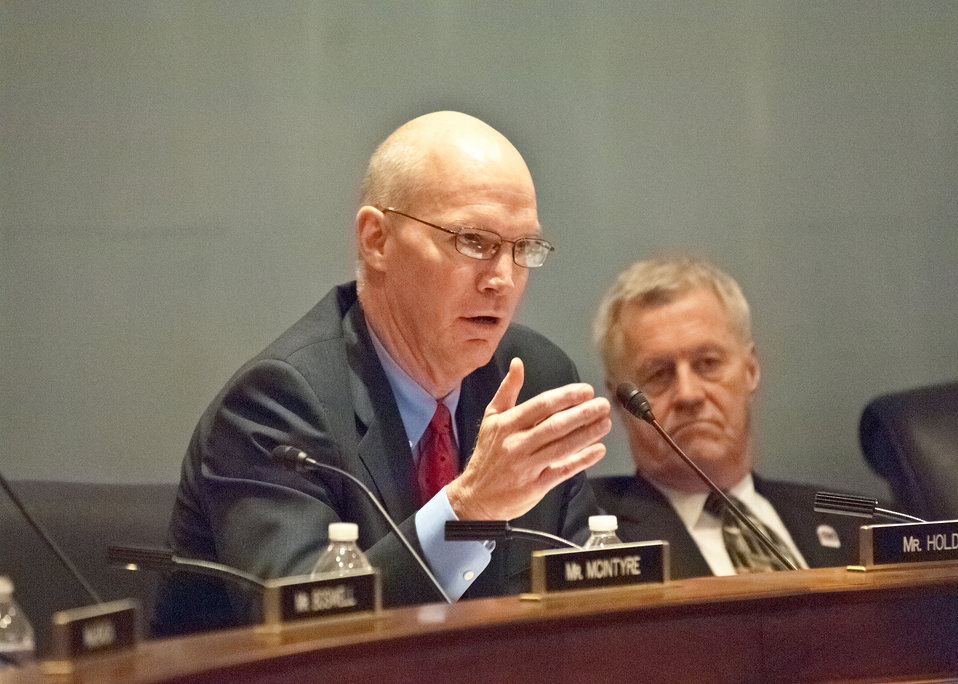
Rep. Tim Holden, Pennsylvania of the House Agriculture Committee presents questions during a House Agriculture Committee hearing to Agriculture Secretary Tom Vilsack in the Longworth House Office Building in Washington, D.C., Thursday, February 17, 2011. Secretary Vilsack discussed the, “State of the Ag Economy.” Rep. Holden also congratulated Secretary Vilsack on the 25th Anniversary of the Natural Resources Conservation Service, Conservation Reserve Program.